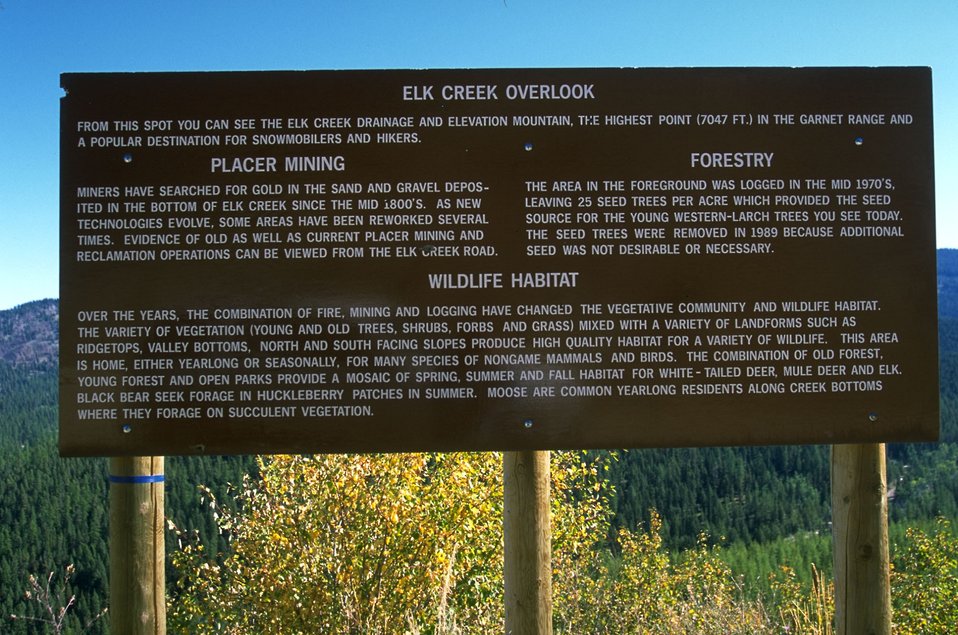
Elk Creek interpretive sign along Garnet Back Country Byway